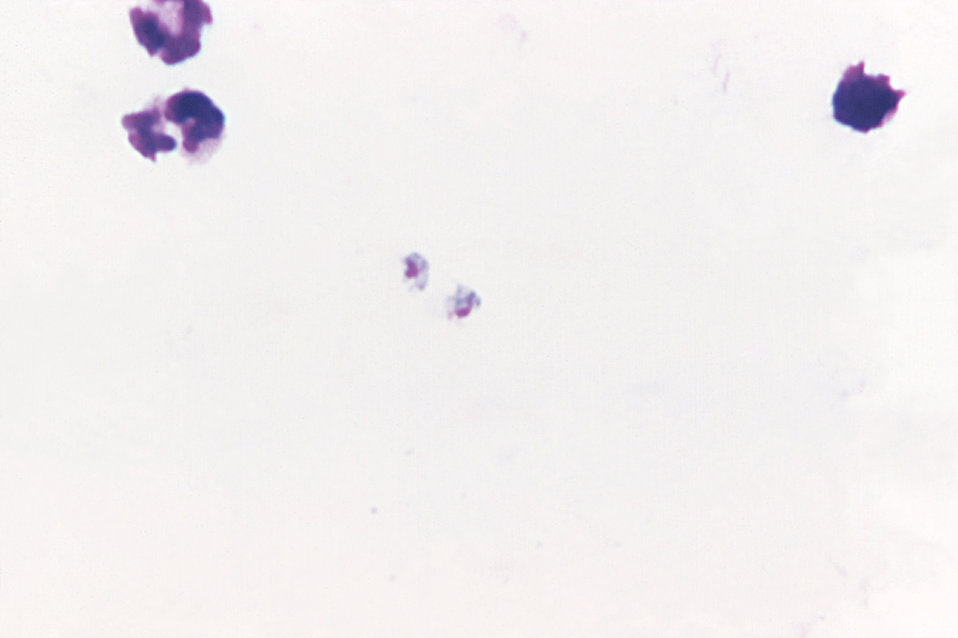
This thick film micrograph depicts a growing Plasmodium malariae trophozoite using Giemsa stain; Mag. 1125X.